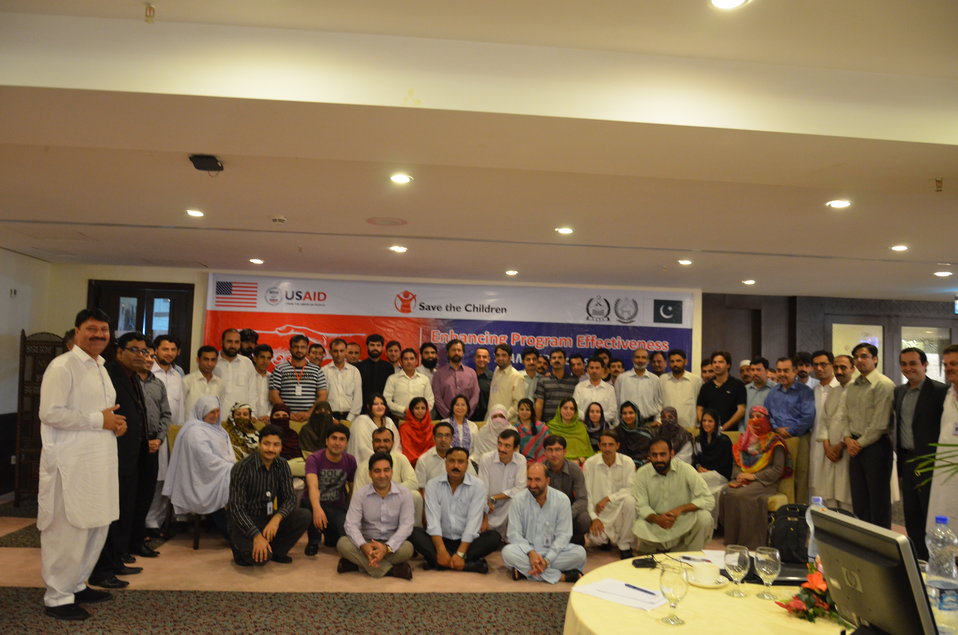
Group Photo at Team up workshop for all staff of the program

A team up workshop was organized for all staff to enhance program effectiveness.